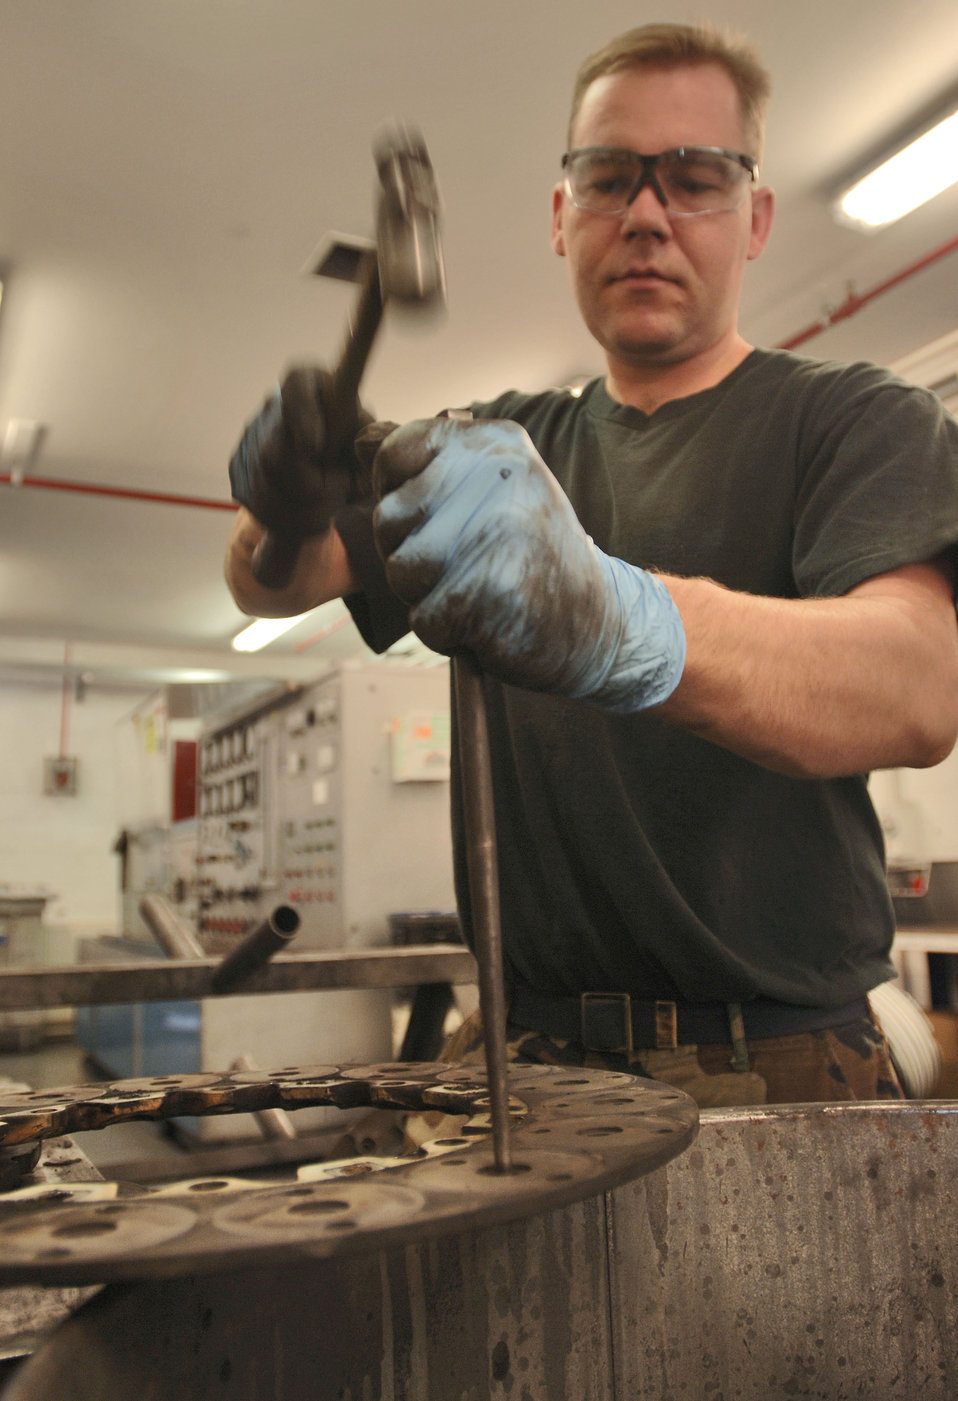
Creative troops, maintenance keep vintage tankers airborne

Staff Sgt. Daniel Schnell removes the brake pucks from a KC-135 Stratotanker brake plate at Royal Air Force Mildenhall, England, on July 26. The sergeant from the 6th Maintenance Squadron at MacDill Air Force Base, Fla., and is working with Mildenhall's 100th Aircraft Maintenance Squadron in the combat integrated repair facility. This facility brings maintainers from other bases to work on aircraft parts from the in-transit aircraft and from the European and Southwest Asia theaters.